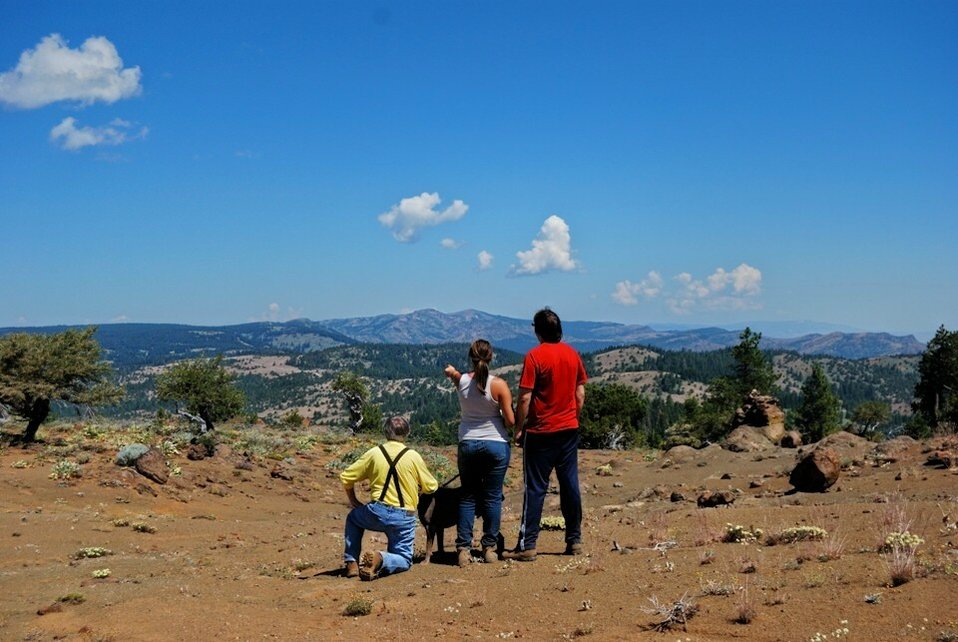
Wilderness photos2

South Warner Wilderness Area in northeastern California has about 79 miles of maintained trails suitable for horse or foot traffic. The diverse stretch of land includes the 9,892-foot Eagle Peak, mountain meadows, clear streams, ragged peaks and an abundance of wildflowers.